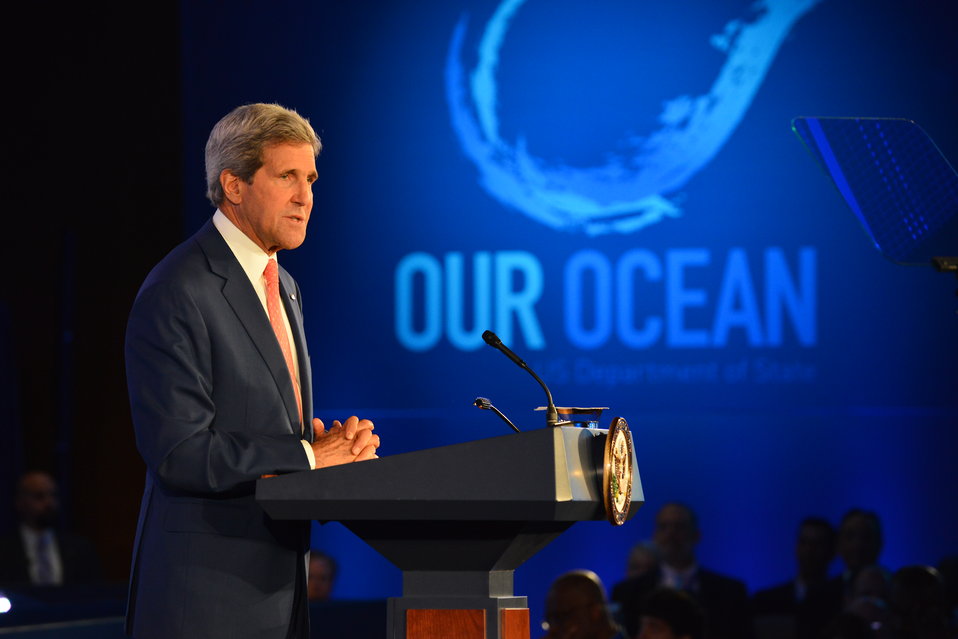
Secretary Kerry Delivers Remarks at the Opening Session of the 'Our Ocean' Conference

U.S. Secretary of State John Kerry delivers remarks at the opening session of the 2014 'Our Ocean' conference at the U.S. Department of State in Washington, D.C. on June 16, 2014.